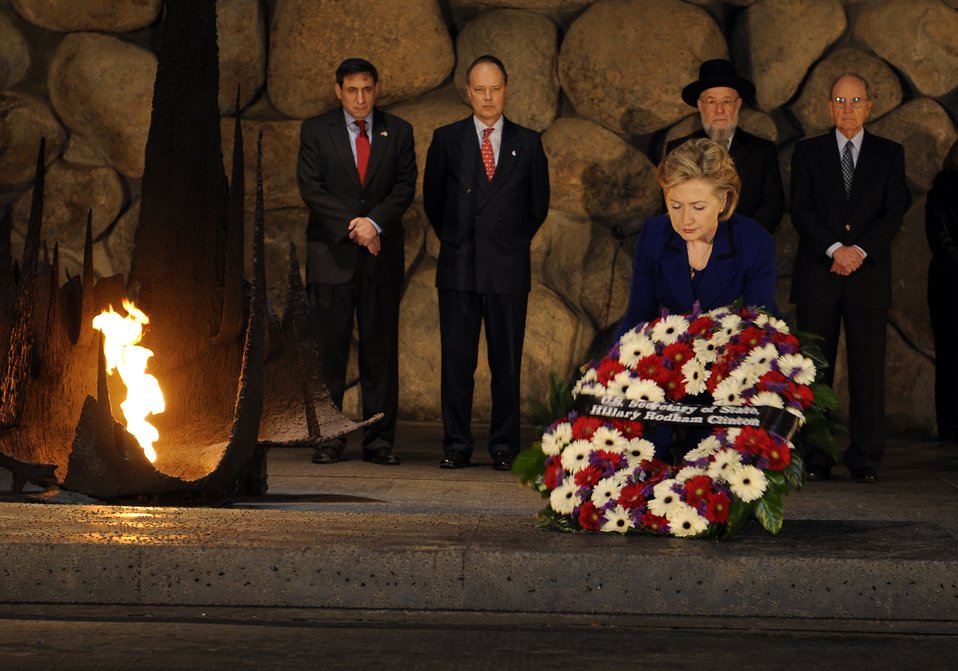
Secretary Clinton Lays a Wreath in the Hall of Remembrance

U.S. Secretary of State Hillary Clinton relights the eternal flame and lays a wreath in the Hall of Remembrance in Jerusalem March 3, 2009.